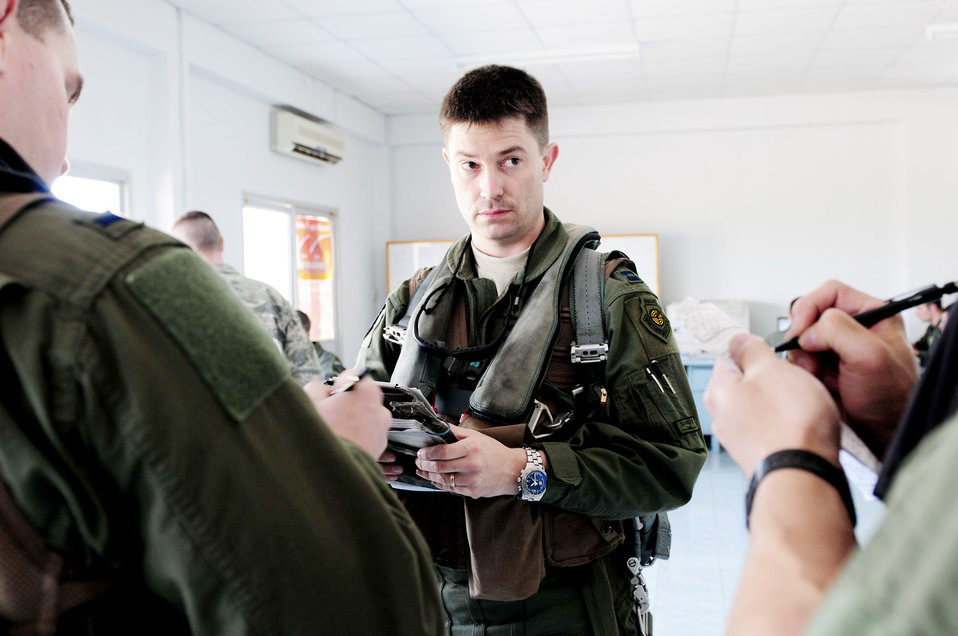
Airmen take flight at Cope Tiger

Capt. James Hunt reviews flight information with his fellow A-10 Thunderbolt II pilots prior to embarking on a four-ship training mission March 4, 2010, at Udon Thani Royal Thai Air Force Base, Thailand. Captain Hunt is deployed to the exercise from the 25th Fighter Squadron at Osan Air Base, South Korea.